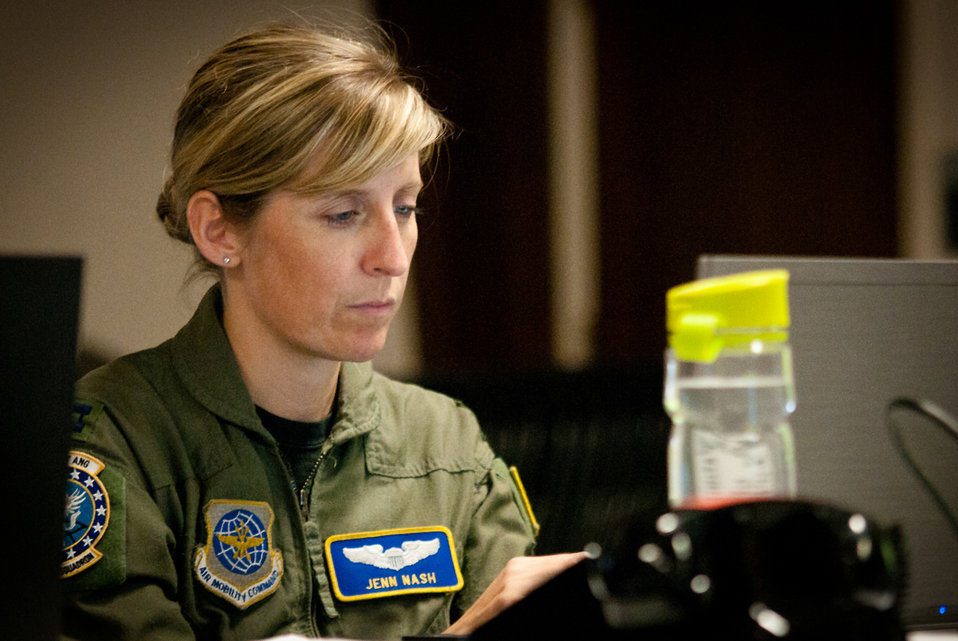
Kentucky National Guard Supporting Earthquake-Response Exercise

Capt. Jenn Nash coordinates long-range mission planning for the joint air operations center May 17, 2011, at the Kentucky Air National Guard Base in Louisville, Ky. The JAOC is supporting a major earthquake-response exercise by prioritizing and allocating air assets for missions into affected areas across the state.